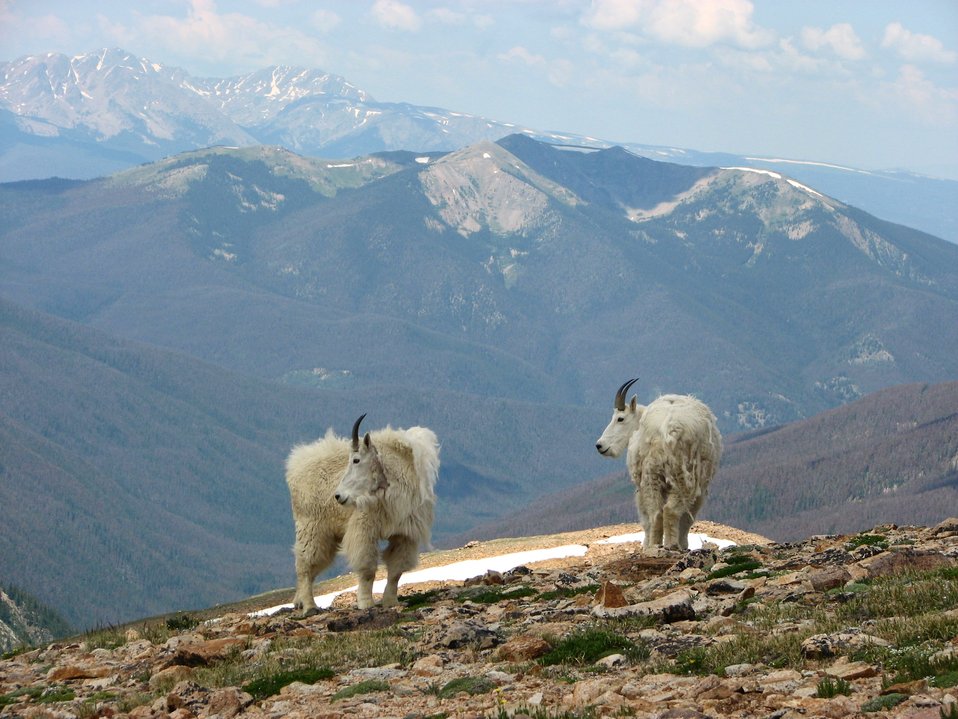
Mountain Goats on the Great Divide

Mountain goats (Oreamnos americanus) on Jones Pass, Colorado in July.

Credit: Jeff Drahota / USFWS

Photo Contest Entry #175